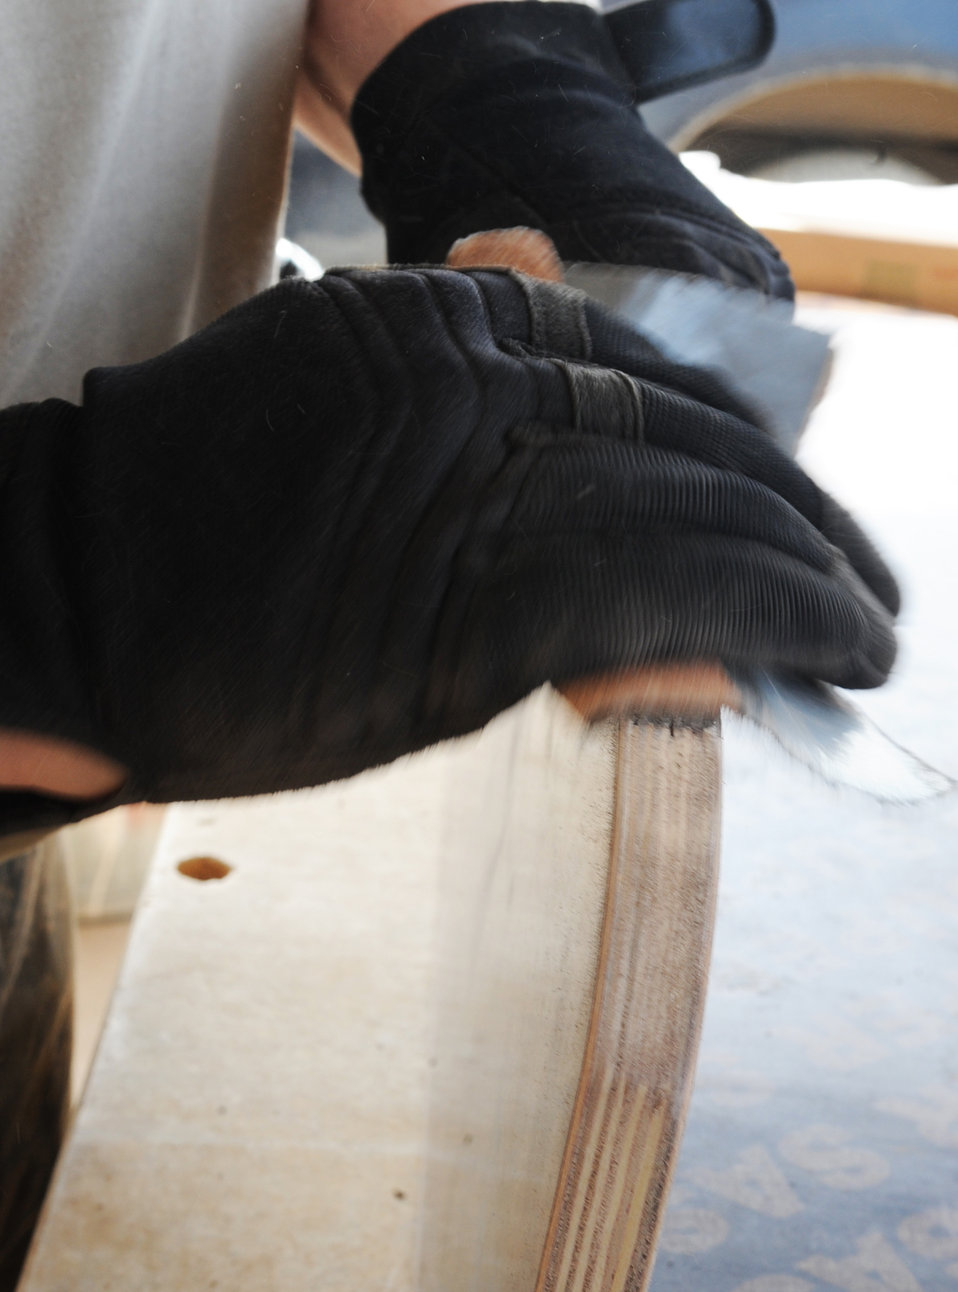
Kirkuk Airmen build desks for Iraqi children

Volunteers from the 506th Expeditionary Civil Engineer Squadron sand down pieces of wood during assembly of school desks for local Iraqi children March 6, 2010, at Kirkuk Regional Air Base, Iraq.